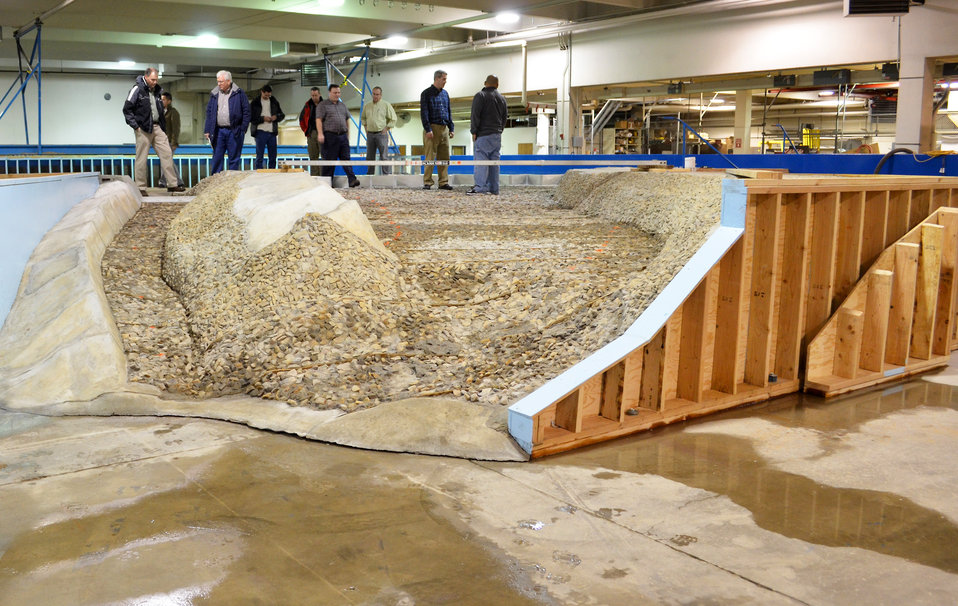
Corps tests new Isabella Dam model

Engineers from the U.S. Army Corps of Engineers Sacramento District’s Isabella Dam Safety Modification Project team inspect the new scale model at Utah State University’s Water Research Laboratory in Logan, Utah, Feb. 12, 2014. The 1:45 scale model is an essential part of the Corps’ pre-construction engineering and design phase and allows engineers to test the design against extreme storms and improve it before construction begins. Construction is scheduled to begin in 2017.